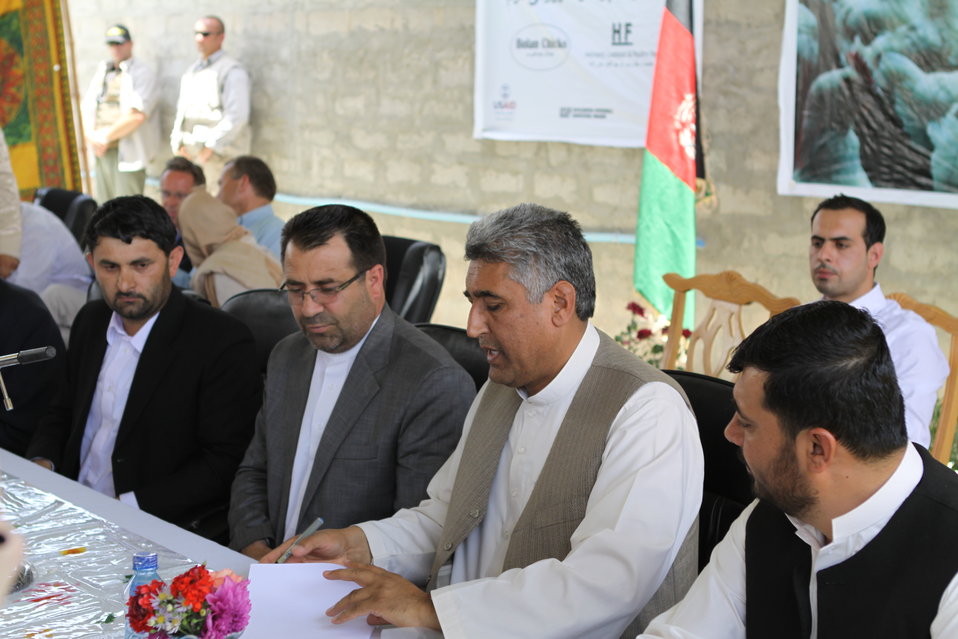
Bolan Poultry Farm